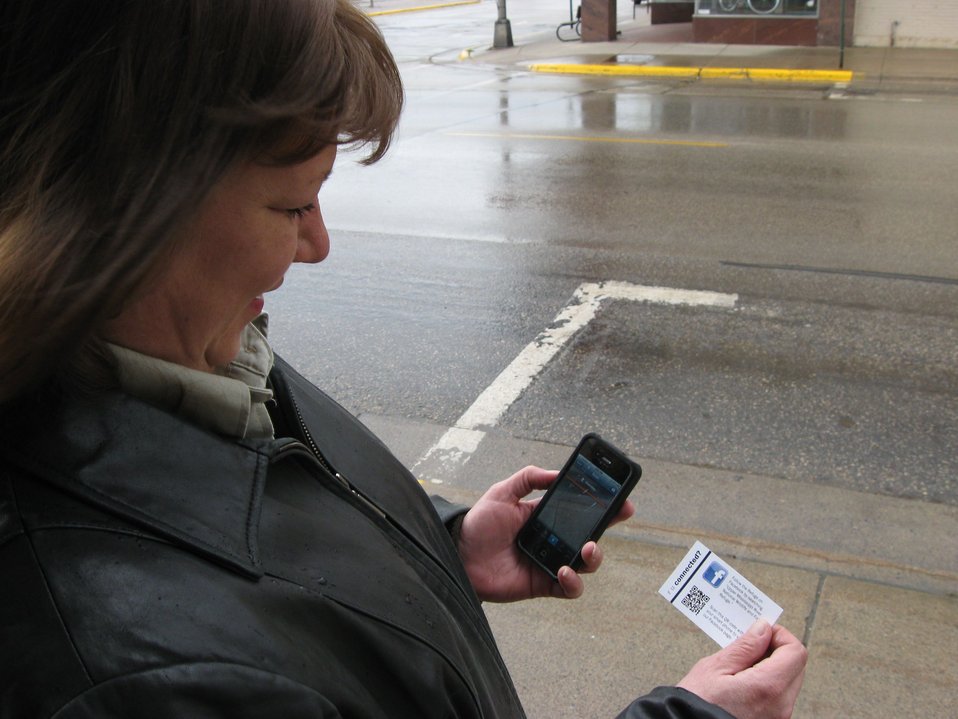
QR codes on refuge staff business cards

National Wildlife Refuge System staffer Lisa Liddell scans a QR code printed on the back of a business card at Upper Mississippi River National Wildlife and Fish Refuge. The code takes users to the refuge’s Facebook page. (Cindy Samples)